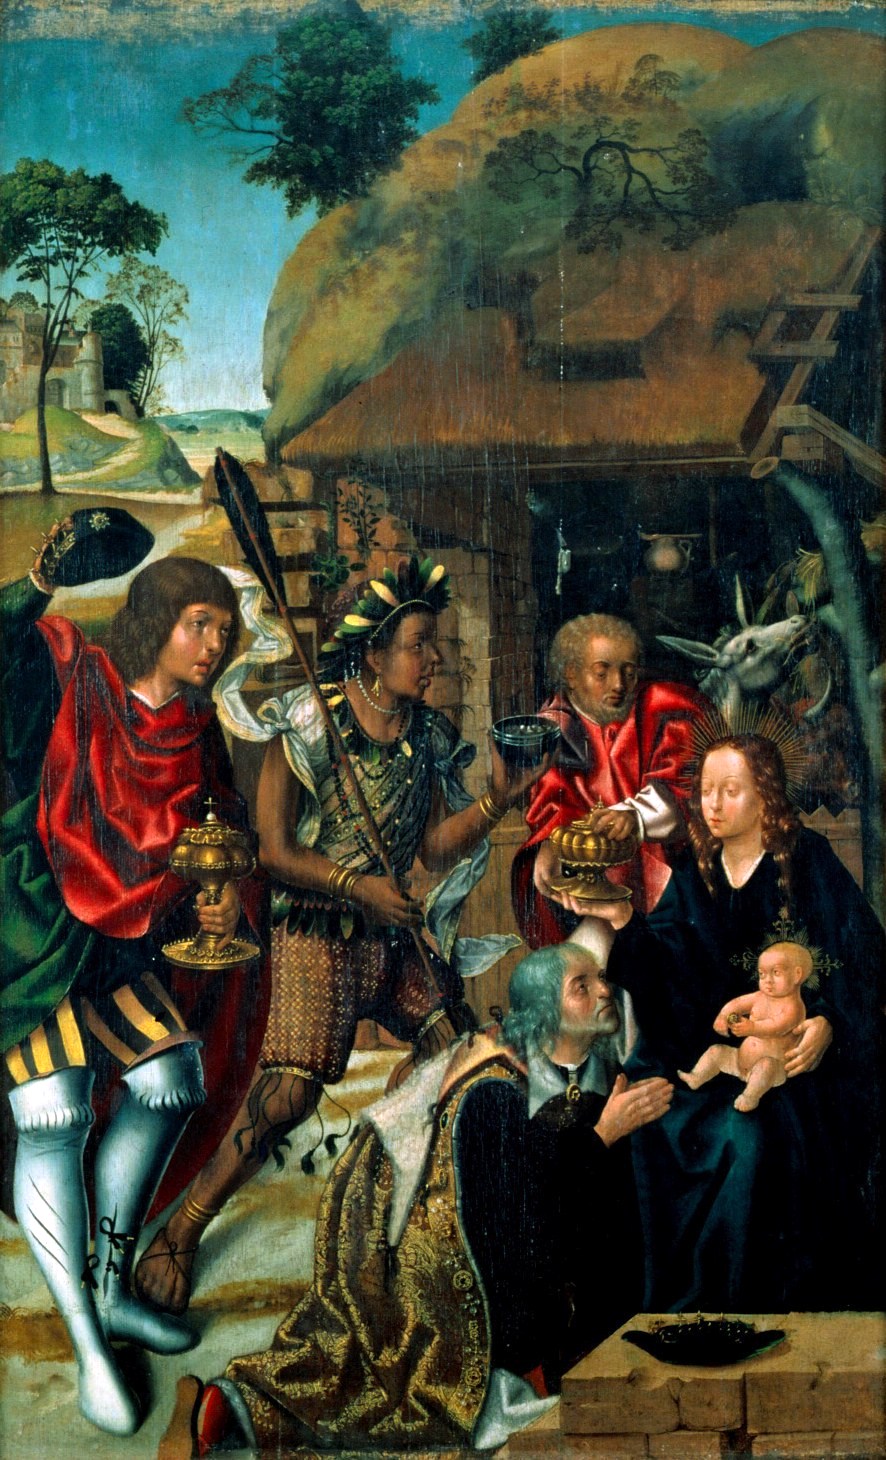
Adoração dos Reis Magos - Francisco Henriques - Museu Grão Vasco